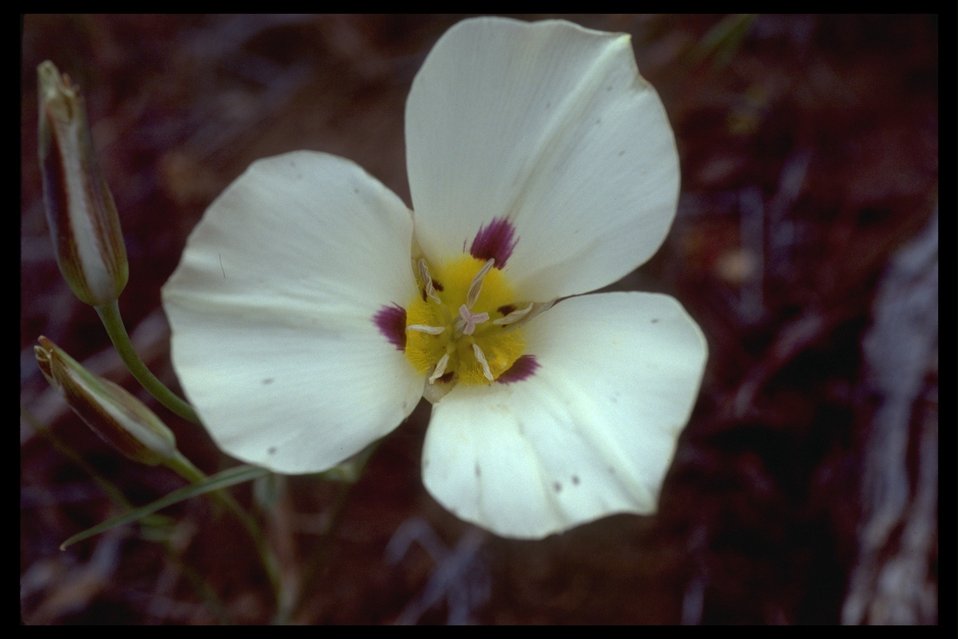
A sego Lily in Alvord Peak WSA. (WSA 2-83)